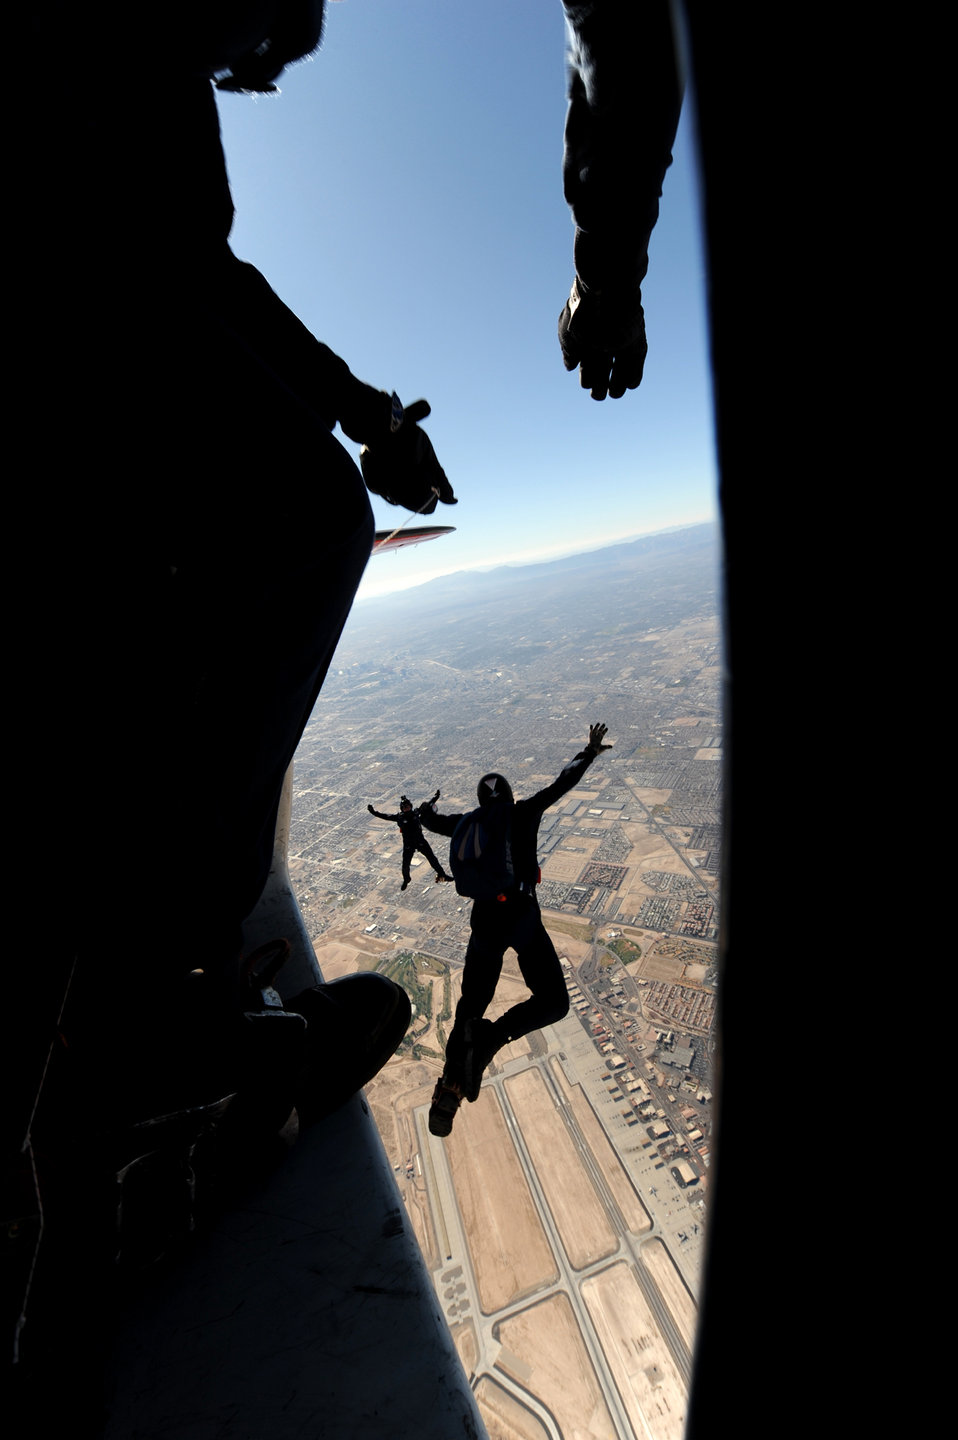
Low out below!

The U.S. Air Force Academy Parachute Team jumps out of their aircraft over Nellis Air Force Base, Nev., for the Aviation Nation air show Nov. 15, 2009. The open house is an opportunity for the Las Vegas community to view aerial demonstrations and static displays of various aircraft from the military.